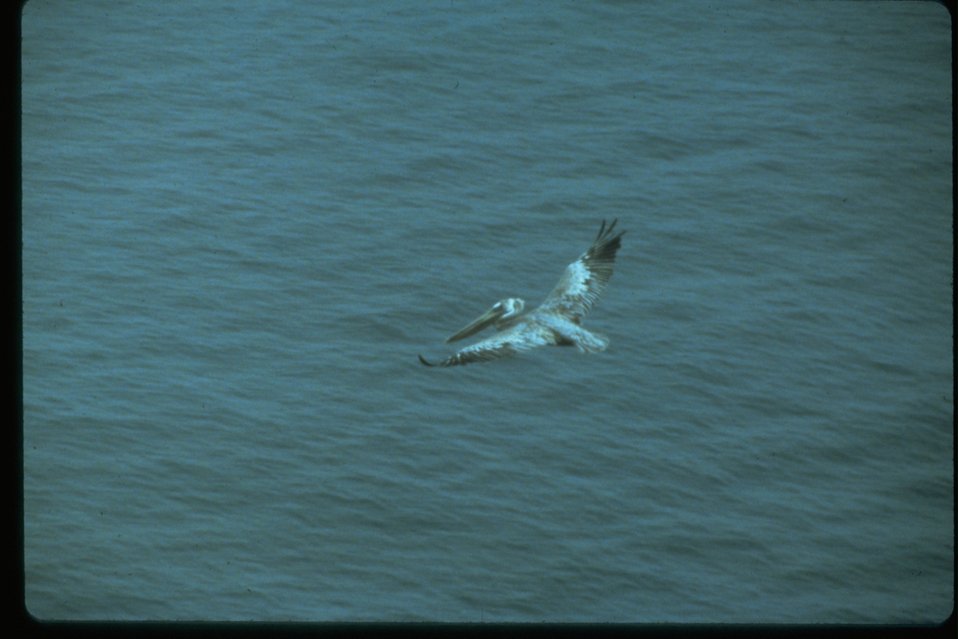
A pelican near the headland of Yaquina Head ONA.